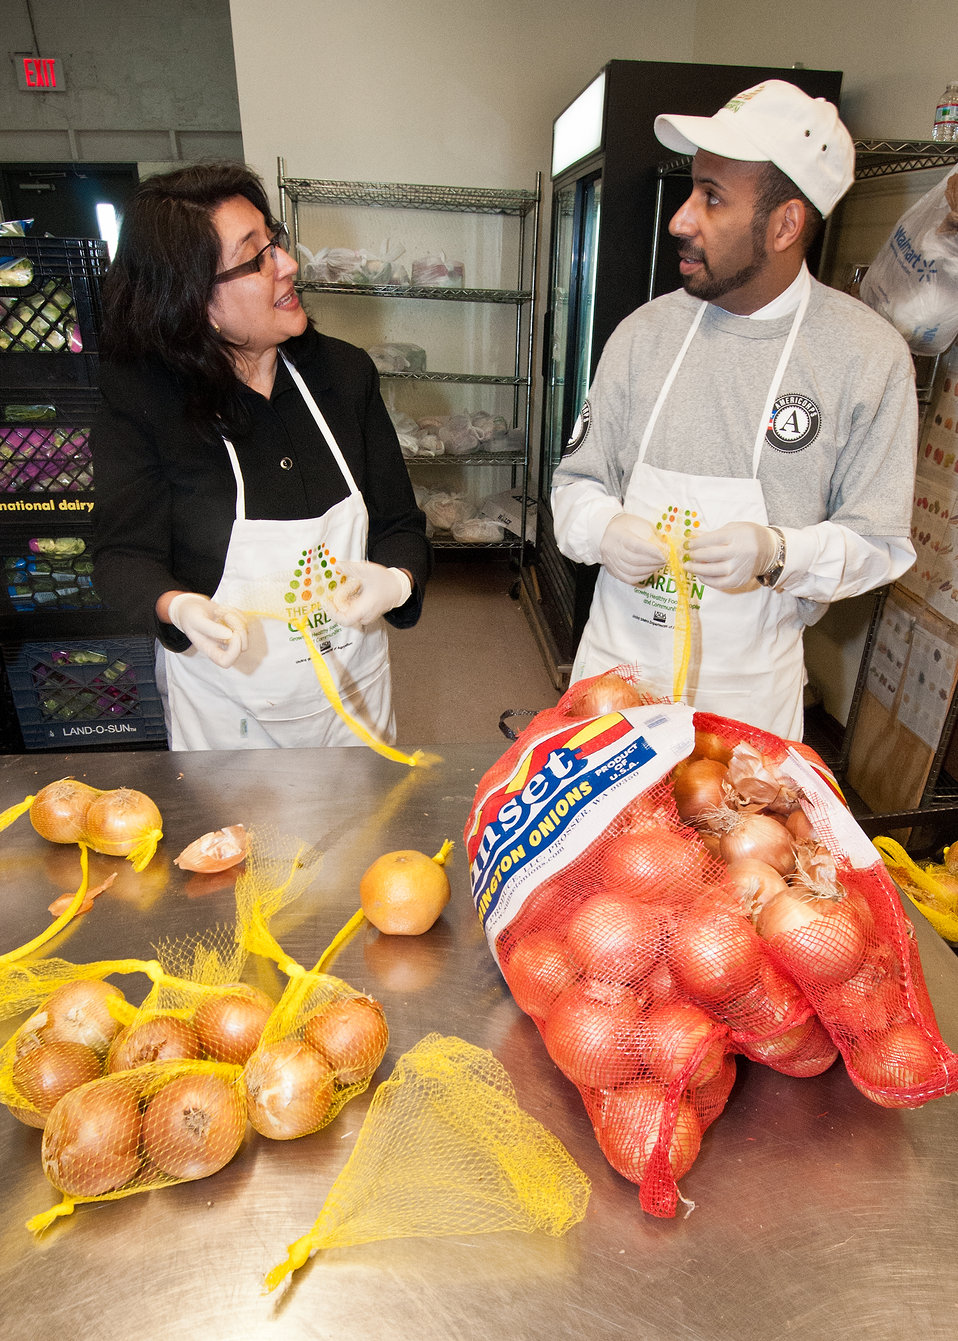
Roxanna Barillas, Center for Faith Based and Neighborhood Partnerships explains LaMesa Completa (The Complete Table) to Marco Davis, Director of Public Engagement, Corporation for National and Community Service (Americorps) while volunteering at the Arlington Food Assistance Center in Arlington, Virginia, Thursday, January 12, 2012. LaMesa Completa is the United States Department of Agriculture’s initiative to reduce hunger in the Latino community by improving access and increasing participation in USDA nutrition assistance programs. It is being led by the Center for Faith Based and Neighborhood Partnerships and the Food and Nutrition Service. Agriculture Secretary Tom Vilsack designated January 12 as the United States department of Agriculture’s Martin Luther King Day of Service to recognize Dr. King’s contributions to the Civil Rights Movement.